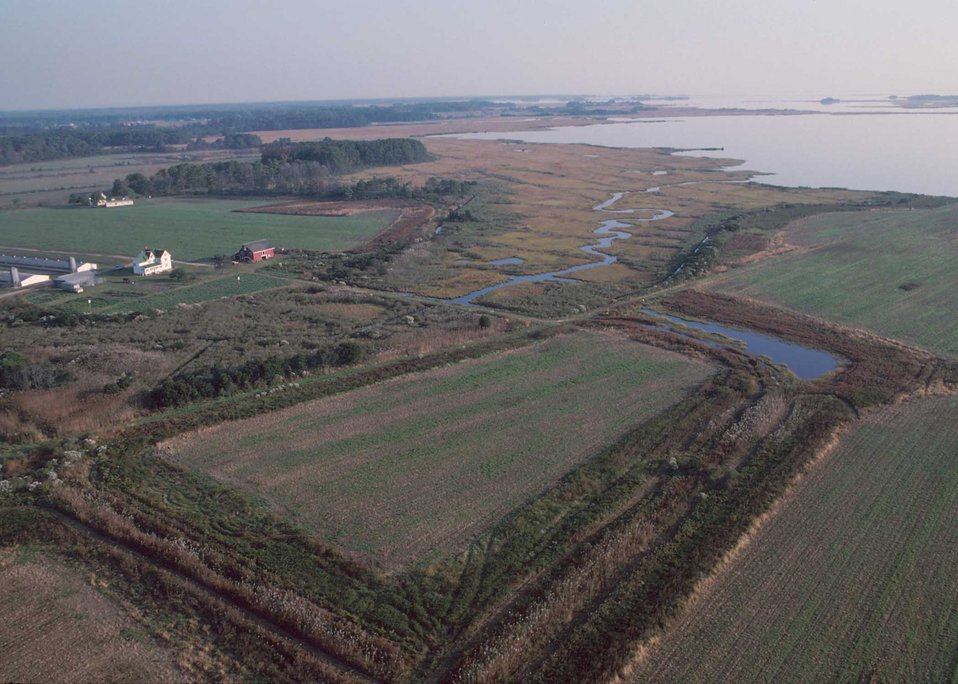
This newly constructed wetland in Wicomico County, Maryland will provide good habitat for migrating waterfowl.